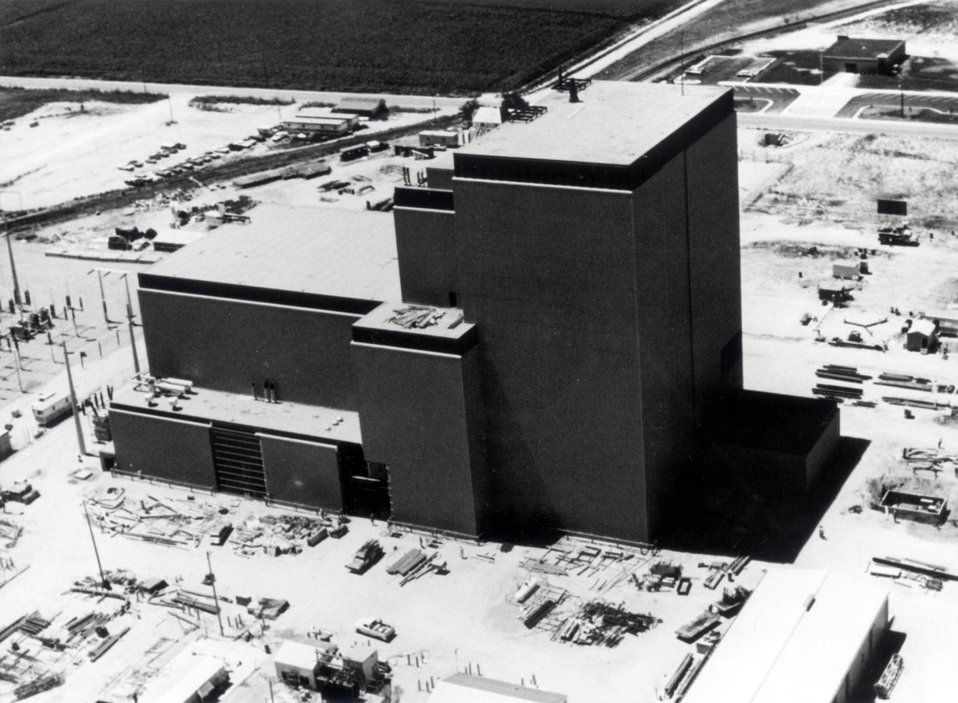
HTGR at Fort St. Vrain, Colorado.